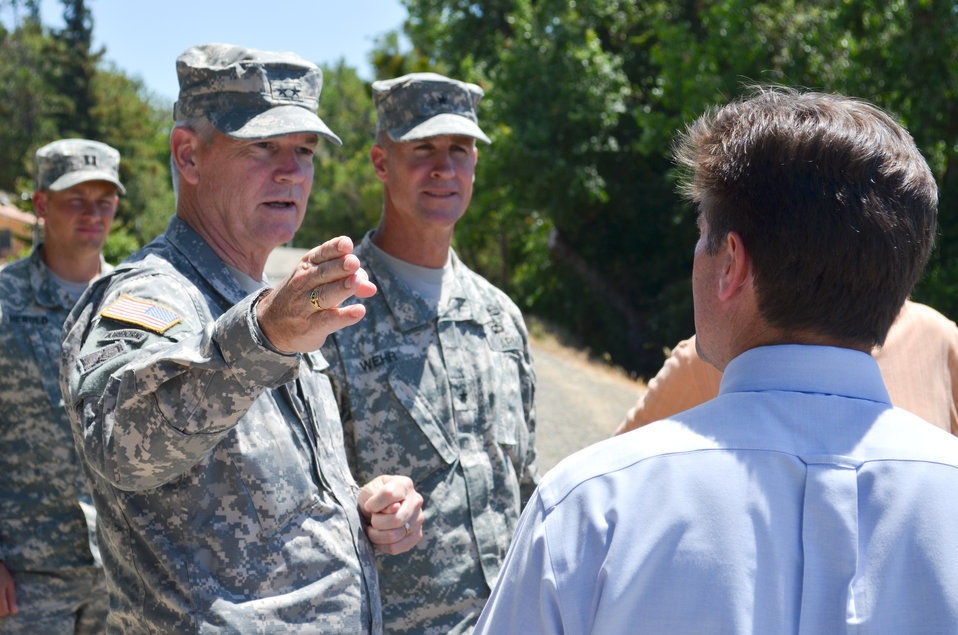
Maj. Gen. Walsh tours Sacramento River levee

Maj. Gen. Michael J. Walsh (left), U.S. Army Corps of Engineers Deputy Commanding General for Civil and Emergency Operations, discusses needed improvements for Sacramento River levees with Brig. Gen. Michael Wehr, commander of the Corps’ South Pacific Division (center), and Creg Hucks, civil engineer with the Corps’ Sacramento District (far right), in Sacramento, Calif., July 19, 2012. Walsh oversees all of the Corps’ flood risk reduction projects in California, including Sacramento levee improvements and the construction of Folsom Dam’s new auxiliary spillway.